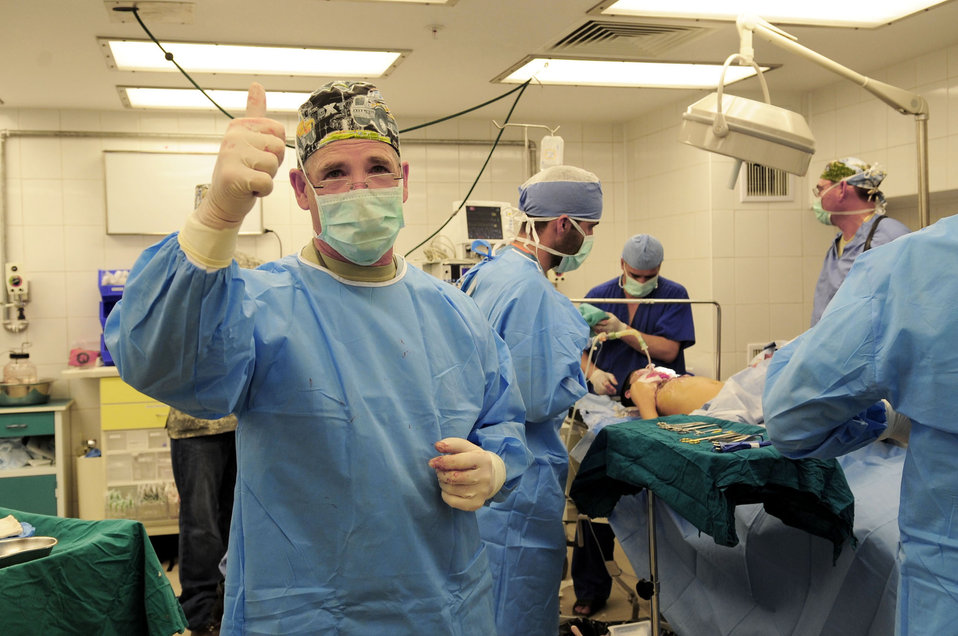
American, Afghan docs begin surgical process for young burn victim

Army Lt.Col. (Dr.) Barry Steinberg gives the thumbs up indicating the surgery on burn patient Abdul Rahman was successful March 1, 2010, at the Kandahar Regional Military Hospital. Doctor Steinberg is a cranial-facial surgeon at the University of Florida, Jacksonville campus.